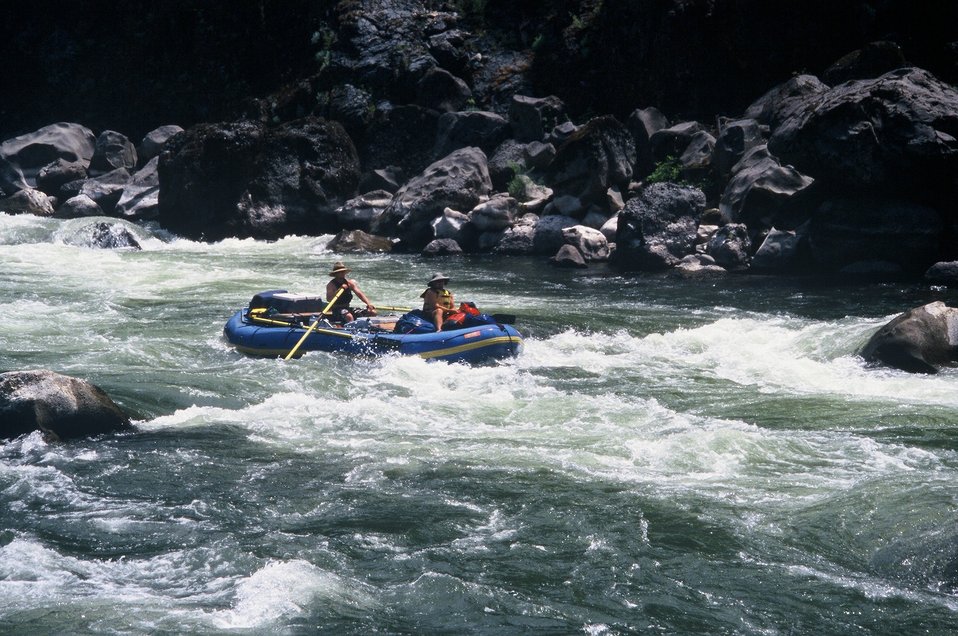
Wild section of the Rogue River from Grave Creek to Foster Bar May 19 to May 22.